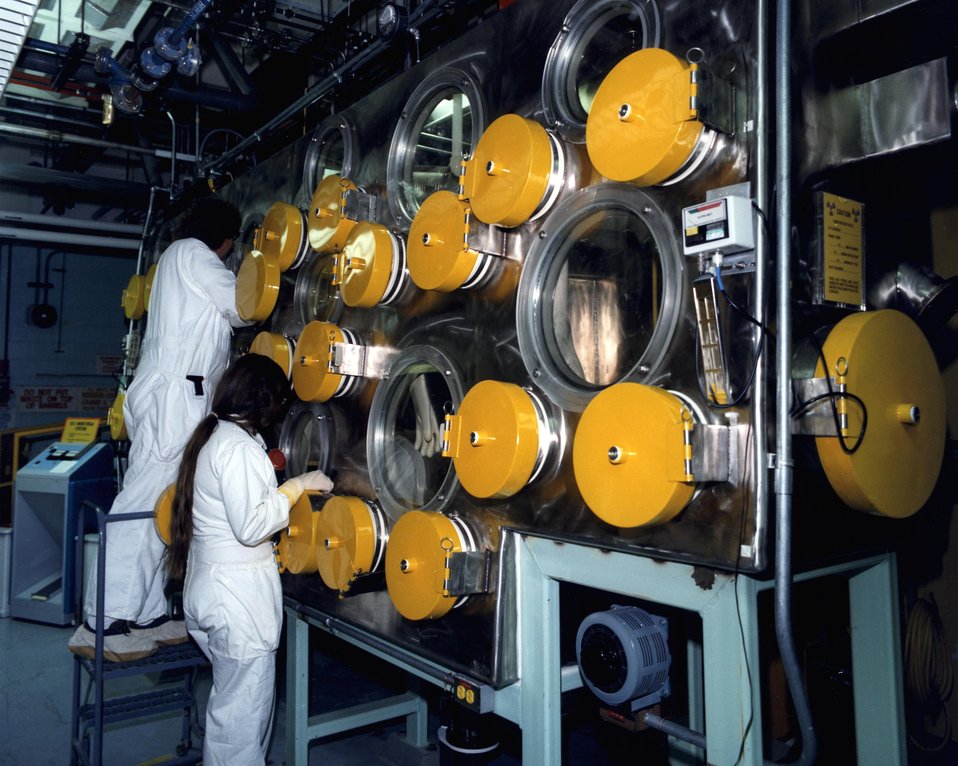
CHEMICAL OPERATORS WORKING A TYPICAL PLUTONIUM GLOVE-BOX LINE IN BUILDING 771.